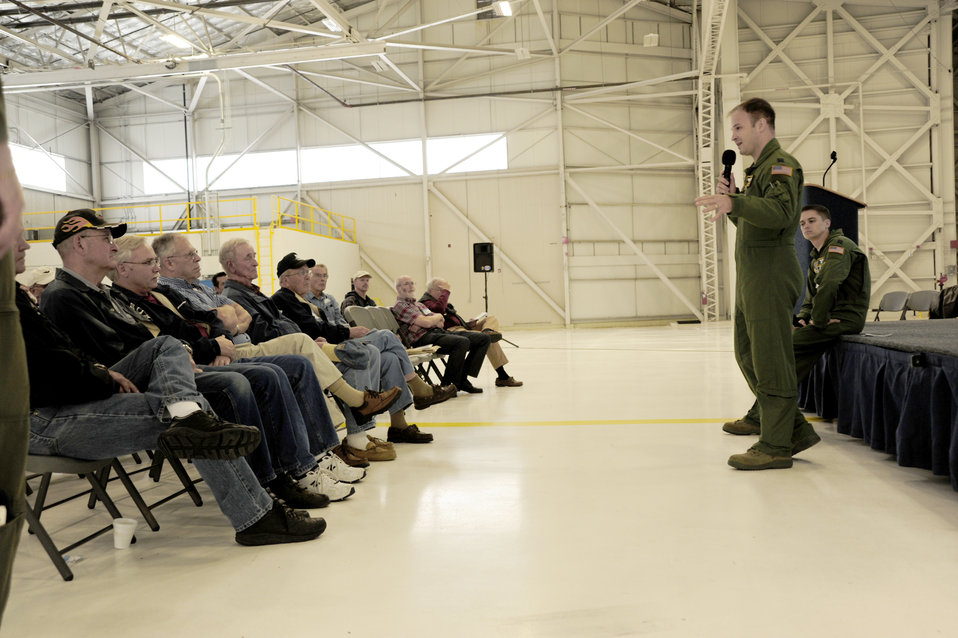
Joint Skies Seminar

Capt. Zachary Dorman speaks to a group of guests at the Joint Skies Seminar Sept. 9, 2010 at Joint Base-Lewis McChord, Wash. The group discussed information and resources in an effort to ensure safer airspace by bringing the Northwest aviation community together. Captain Dorman is a 62nd Airlift Wing flight safety officer and Joint Skies Seminar lead organizer